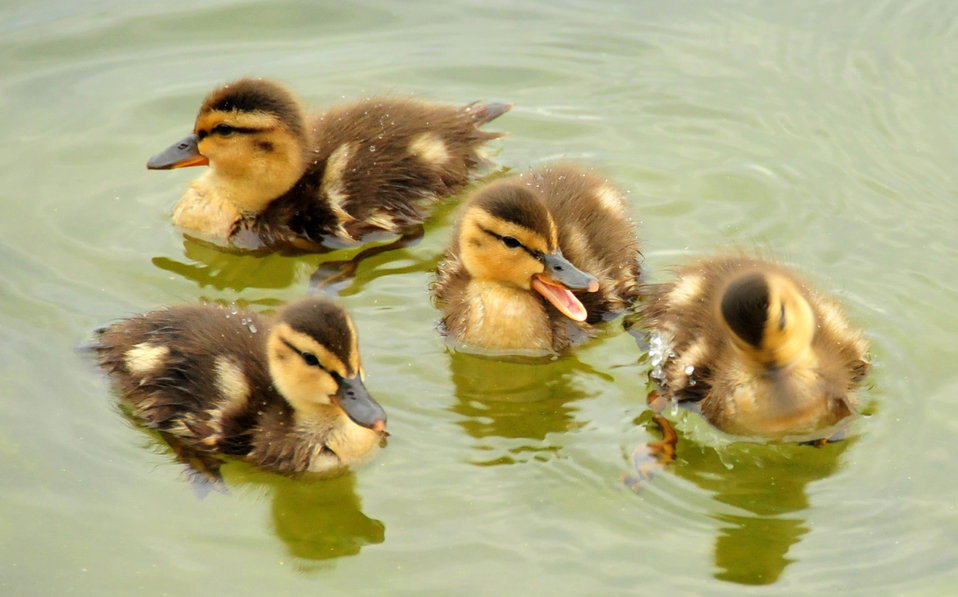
Mallard Ducklings 1